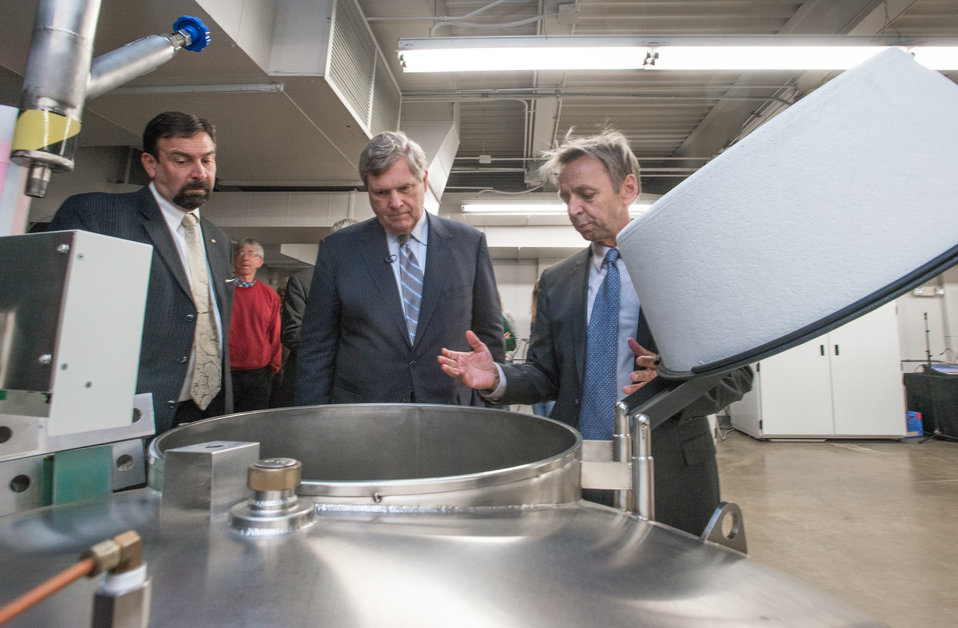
(L to R) Colorado State University (CSU) President Dr. Anthony Frank and Agriculture Secretary Tom Vilsack look into an offline cryogenic storage tank as U.S. Department of Agriculture's (USDA) Agriculture Research Service (ARS) National Center for Genetic Resources Preservation (NCGRP) Research Geneticist Leader Dr. David Dierig describes the tank’s capabilities and function at USDA's ARS National Center for Genetic Resources Preservation (NCGRP) in Ft. Collins, CO on Wednesday, Nov. 6, 2013. The Cryogenic Storage Vault has more than 45 cryogenic tanks that hold animal germplasm, plant tissue culture, and seeds that are stored at -196 °C (-321 °F) in liquid storage or to -193 °C (-315 °F) in vapor storage. NCGRP is the largest agricultural gene bank facility in the U.S. The NCGRP staff conducts groundbreaking research to develop more efficient and effective means for preserving plant and animal germplasm, and for better understanding the genetic structure of these invaluable materials. The research findings, preservation techniques, and specialized technology developed by the NCGRP have been adopted by gene banks around the world: many international scientists travel to the NCGRP for research and training.